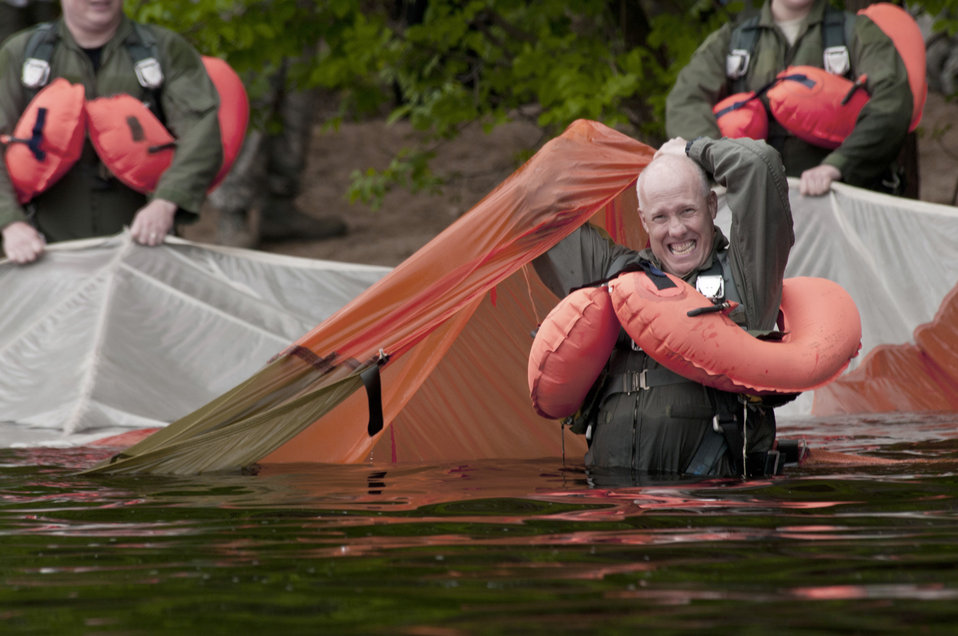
Water survival training

Lt. Col Daniel E. Gabrielli emerges after swimming under a parachute canopy June 11, 2011, during aircrew survival training in the St. Croix River near Hastings, Minn. Colonel Gabrielli is assigned to the Minnesota Air National Guard's 133rd Airlift Wing.